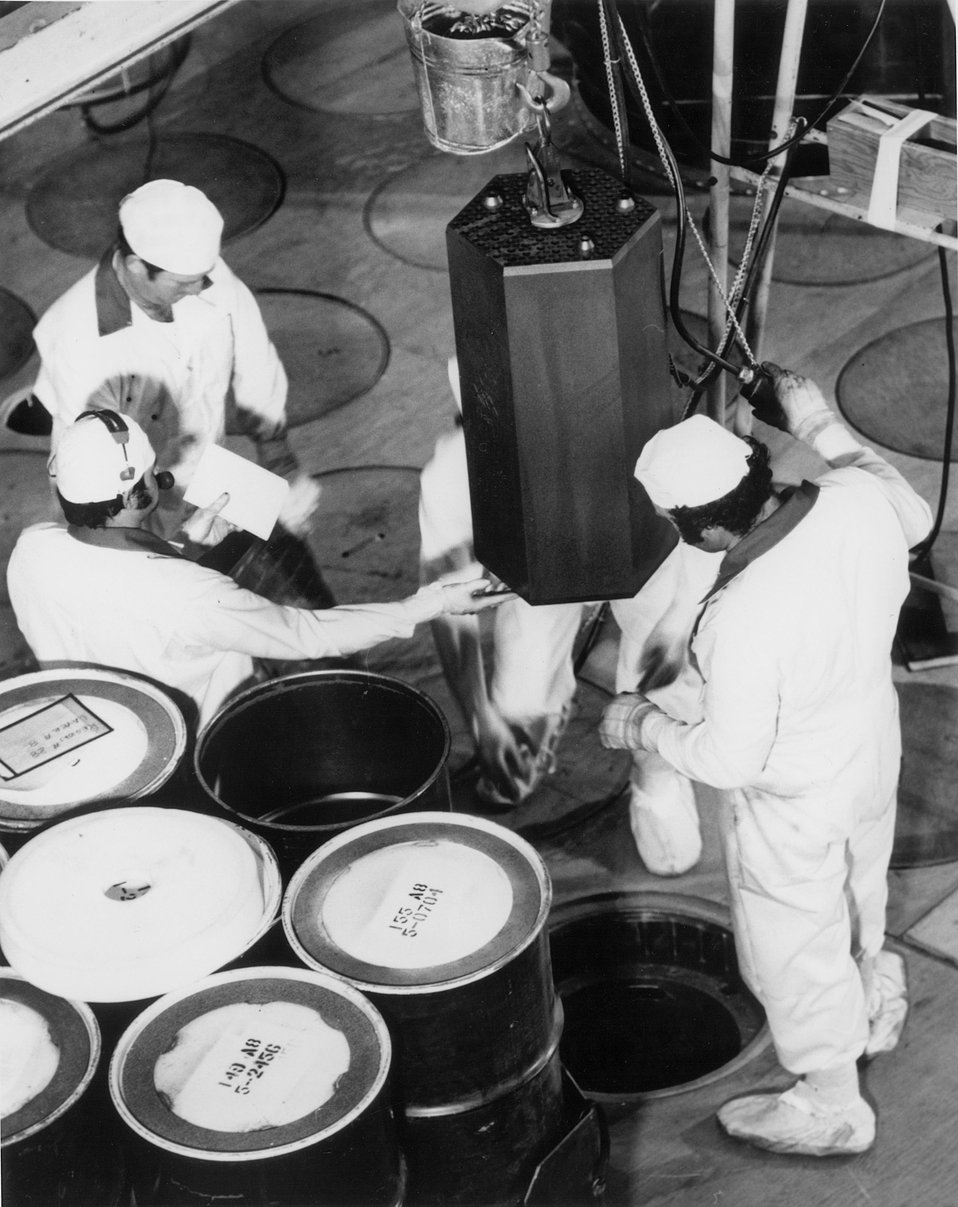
One of the 1,432 graphite fuel blocks being lowered into the core of Public Service Company of Colorado's Fort St. Vrain Nuclear Generating Station at Platteville, CO.